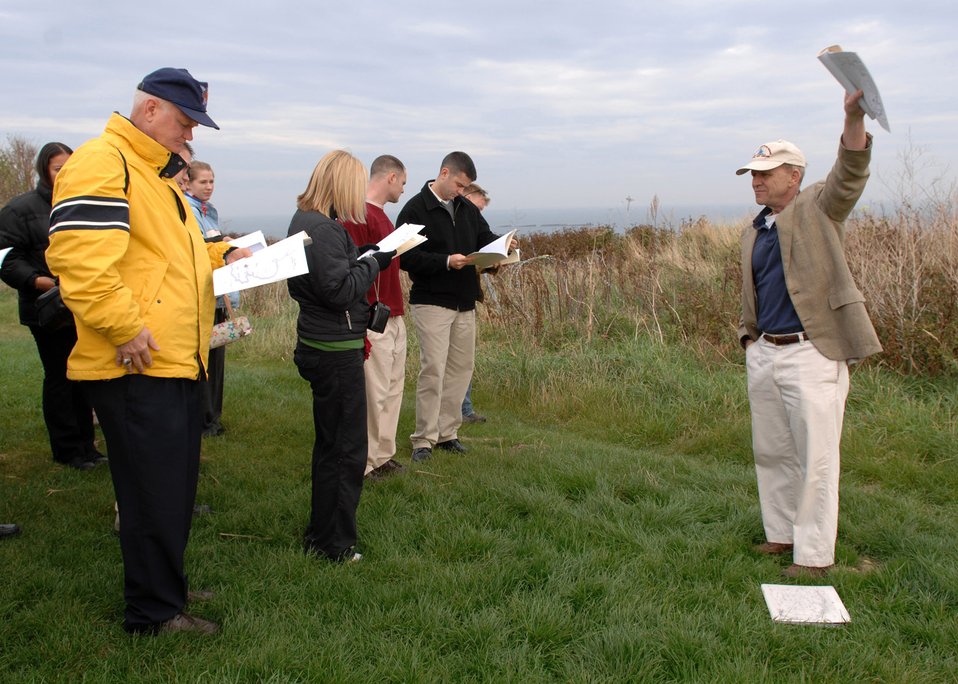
3rd Air Force commander, 24 Airmen visit Normandy

Retired Army Col. Peter Herrly (right) leads Lt. Gen. Robert D. Bishop Jr., the 3rd Air Force commander, and 24 Airmen on a tour of Normandy Oct. 25. The Airmen were guided on the two-day excursion of Pegasus Bridge at B?nouville, and the Omaha, Fox Green, Easy Red and Utah beaches.